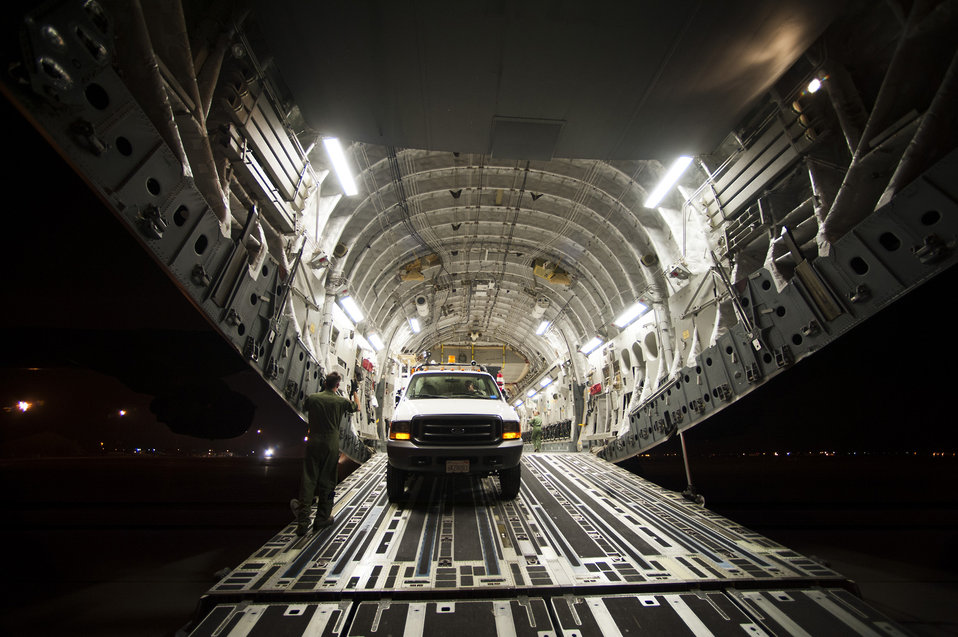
Load up

Senior Airman Joshua Bischoff loads a utility truck bound for New York on a C-17 Globemaster III at March Air Reserve Base, Calif., Nov. 1, 2012. Bischoff is a loadmaster with the 15th Airlift Squadron.